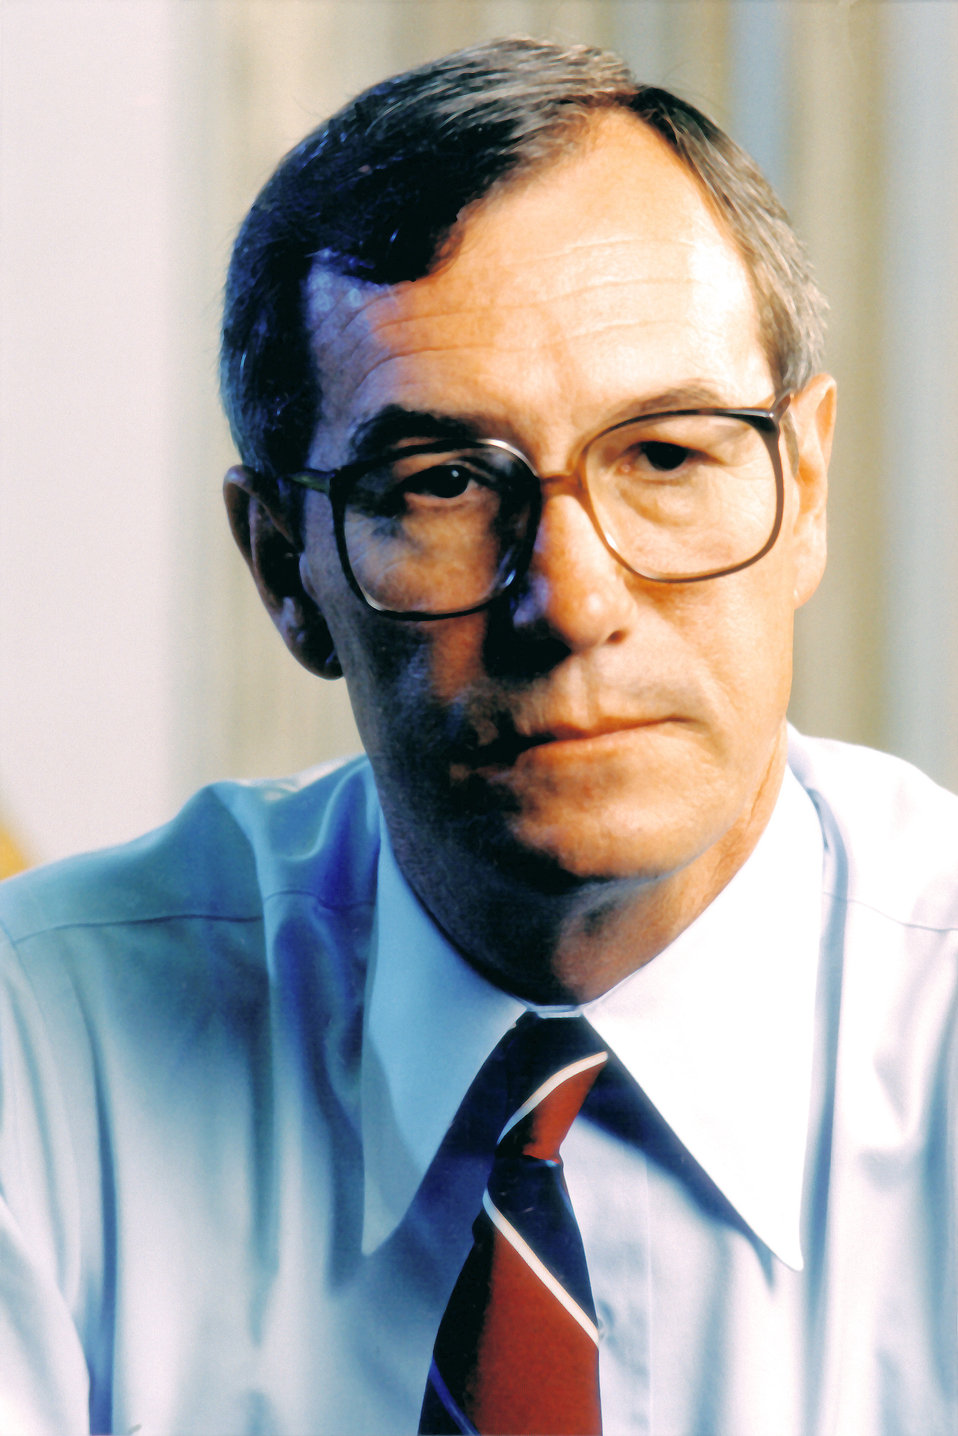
Dr. Donald B. Rice

1970's -- Dr. Donald B. Rice, 17th Secretary of the Air Force, has published articles, reports and papers dealing with economic policy, government organization and budgeting, defense resources management, energy systems, strategic capabilities and arms control, regulatory problems, and analytical techniques.